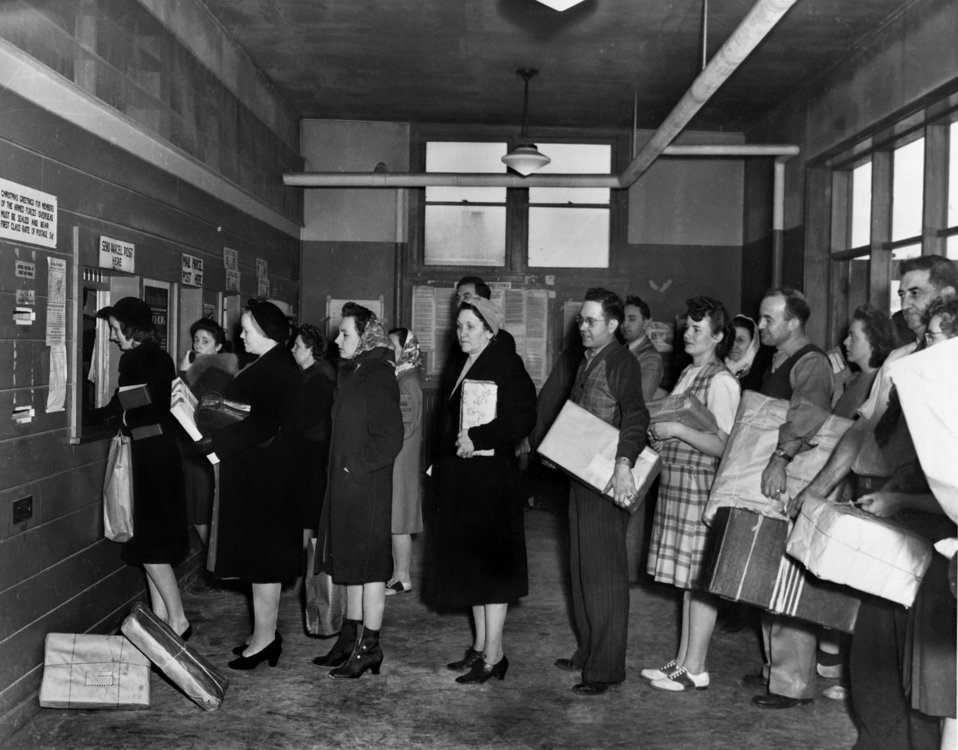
Oak Ridge Post Offices at Christmas Rush

pro176-4 DOE photo Ed Westcott 12-8-1944 Oak Ridge Tennessee